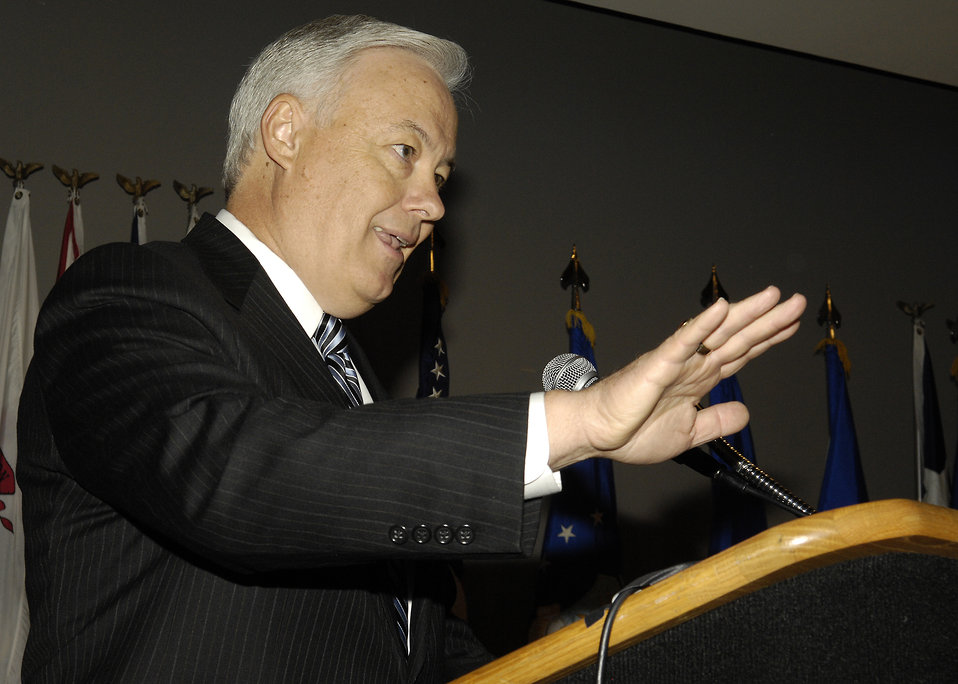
Presidential Rank Awards presented

Gary B. Richey, named a distinguished senior executive April 14 during the Air Force Presidential Rank Awards Ceremony, speaks on behalf of all Air Force civilian officials recognized during a ceremony at Arlington National Cemetery.